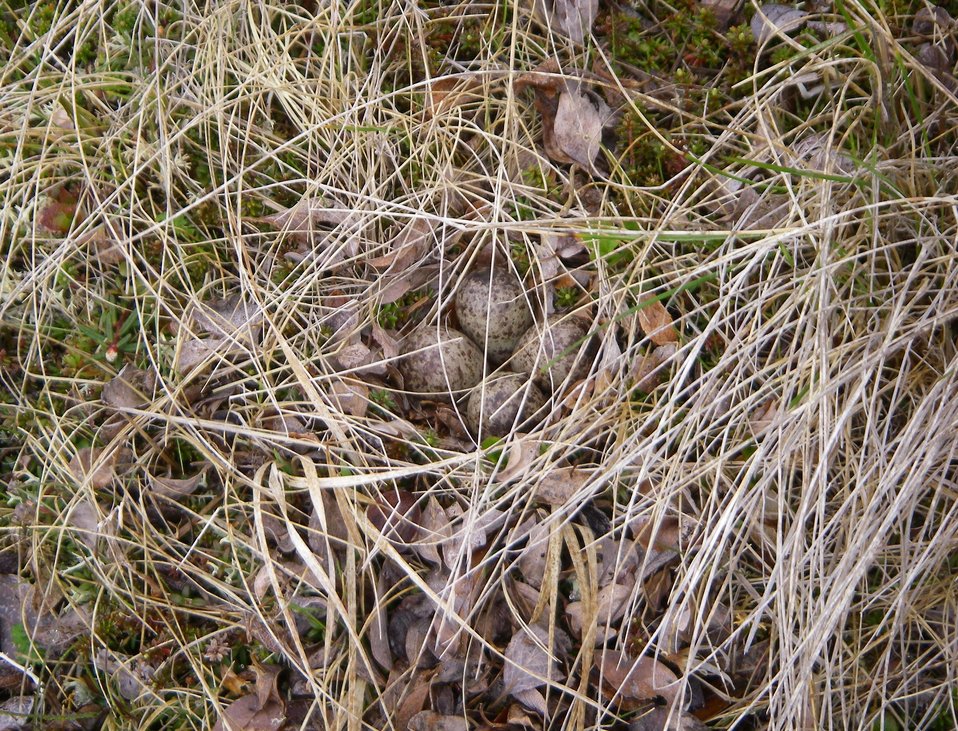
2008-06-19 LESA nest Izembek-Kinzarof isthmus Sowl

Wilderness north of Kinzarof Lagoon, Izembek National Wildlife Refuge
Photo by Kristine Sowl,
USFWS, Public Domain